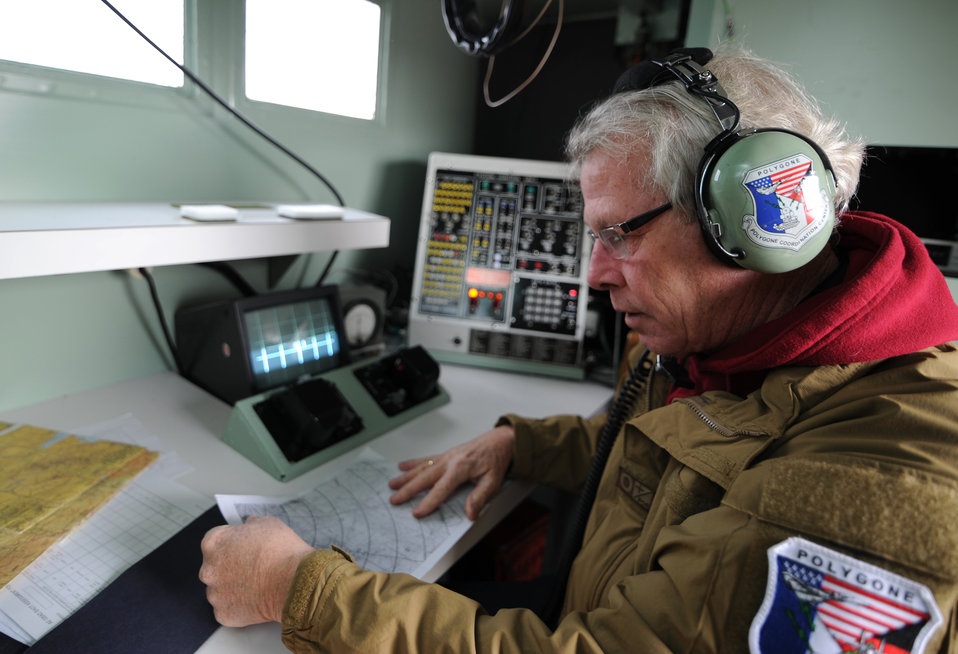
U.S. pilots plant SEAD with Turkish counterparts

Jack Graham, a Polygone radar technician, reviews a map of the surrounding area inside a tactical radar threat generator during Anatolian Falcon 2012 in Konya, Turkey, March 8, 2012. Graham operated the radar, tracking participating aircraft in the exercise to provide a simulated ground threat capability.